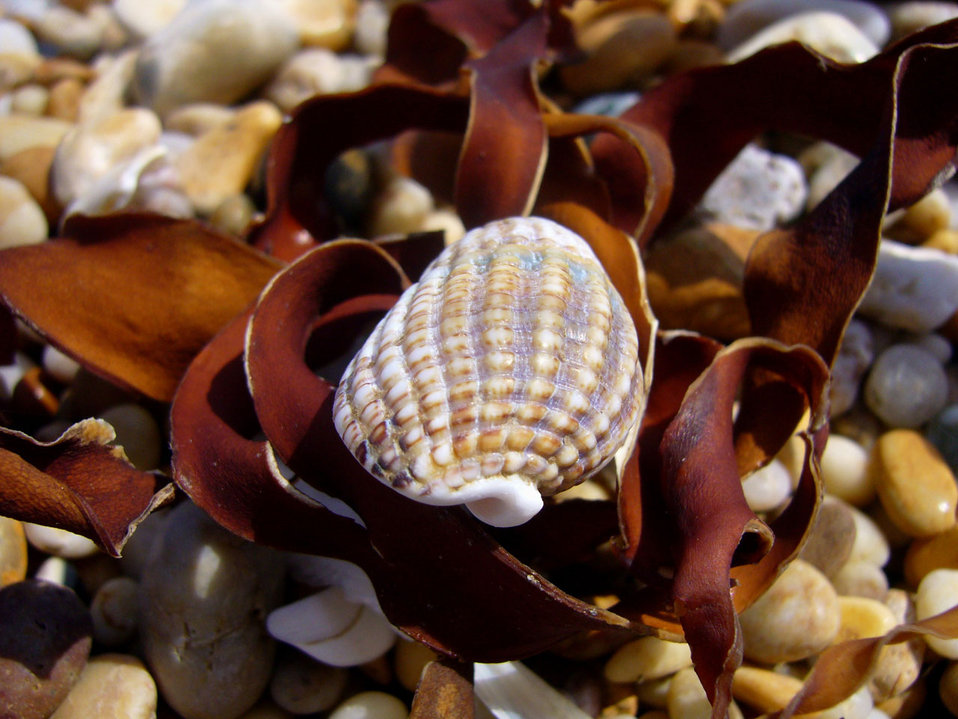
Seashell on the beach.